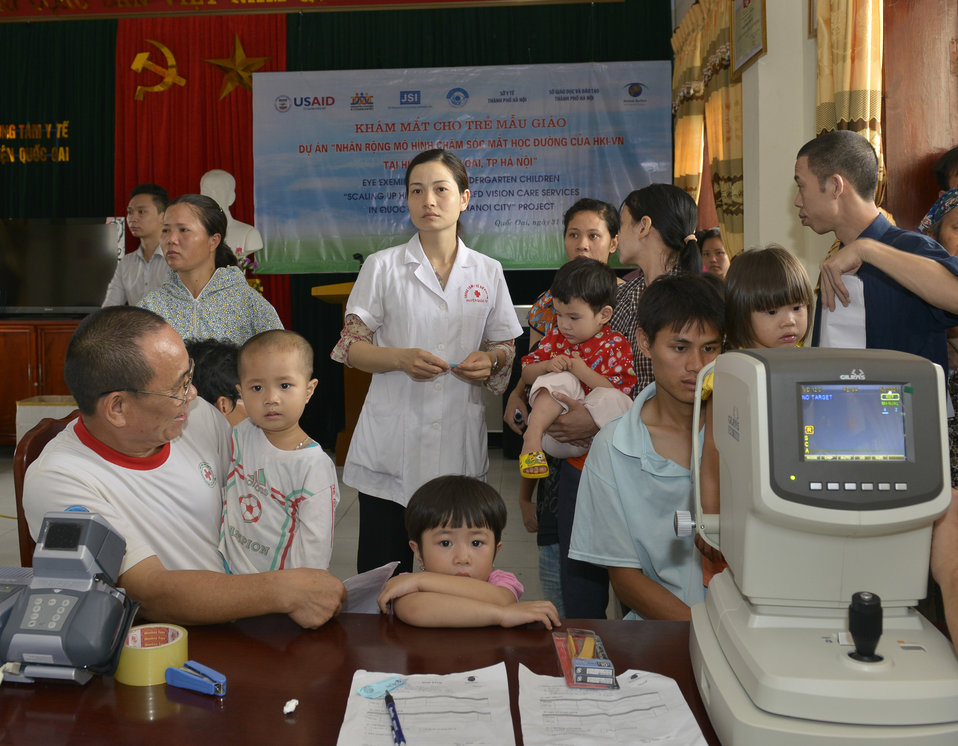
Eye screening for kindergarten children in Quoc Oai district of Hanoi

Quoc Oai, Hanoi. May 31, 2014.